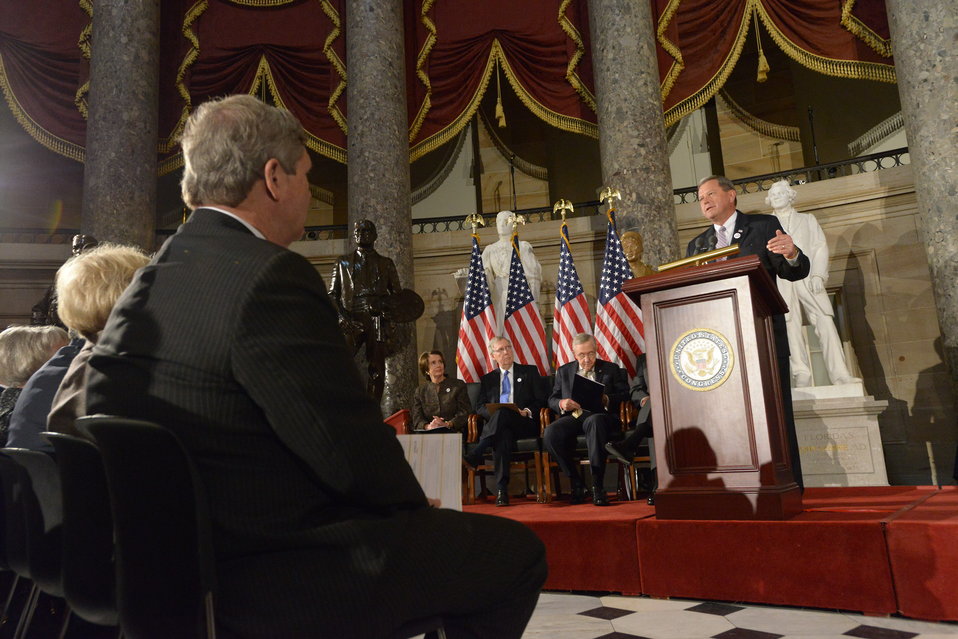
Agriculture Secretary Tom Vilsack listens to Congressman Tom Latham at the unveiling ceremony of the Dr. Norman Borlaug statue in National Statuary Hall at the U.S. Capitol in Washington, D.C. on Tuesday, Mar. 25, 2014.